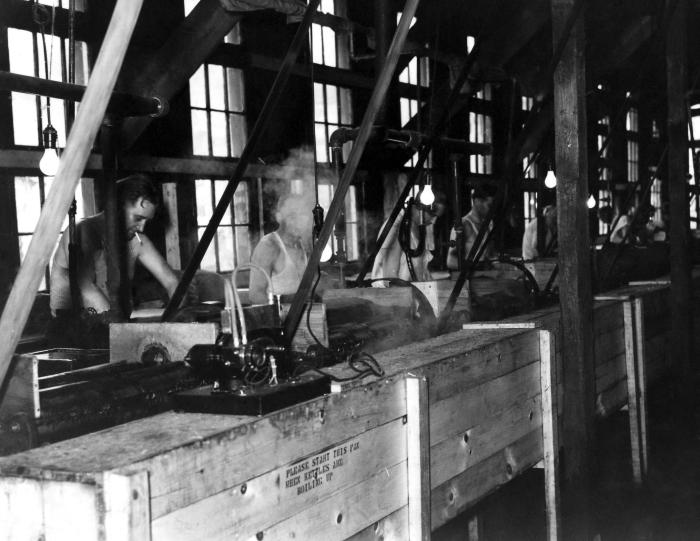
This historical image, which was provided by the Center for Disease Control's (CDC), National Institute for Occupational Safety and Health (NIOSH), was shot inside a Connecticut hat manufacturing plant. The photograph depicted a number of hat manufacturers on a hat-assembly line performing the act of 'kneading' the processed animal fur. Kneading the fur by manipulating it like dough, dipping it in boiling water, then kneading the material again, and again, allowed the fir to commingle without having to weave the fibers, in order to form a cloth material, which will later become a hat. Working with the 'carroted' animal fir, opened the workers up to the possibility of succumbing to mercury poisoning, a heavy metal used in the processing of the raw fir. The steam, liberated from the kneading process, facilitated the airborne dissemination of the mercury nitrate, which could easily be inhaled with proper ventilation, and a protective breathing mask.